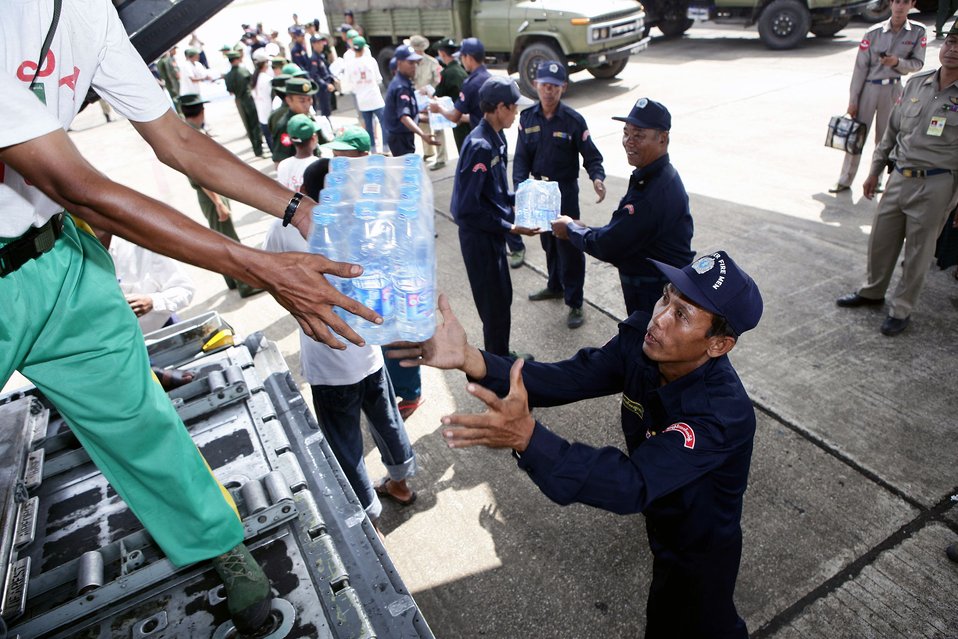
First C-130 crew provides humanitarian assistance to Burma

A civilian aid worker from Burma hands bottled water to a Burma servicemember from a U.S. Air Force C-130 Hercules May 12 at the Yangon International Airport in Burma. The plane carrying water, food and medical supplies provided relief to Burma, which was struck by Cyclone Nargis May 2.